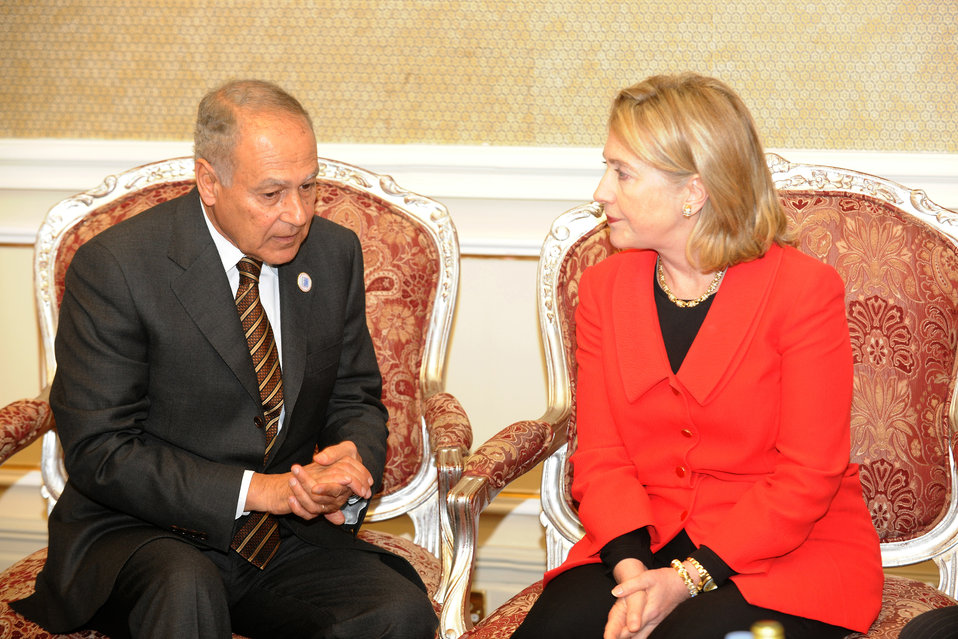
Secretary Clinton Speaks With Egyptian Foreign Minister Ahmed Ali Aboul Gheit

U.S. Secretary of State Hillary Rodham Clinton speaks with Egyptian Foreign Minister Ahmed Ali Aboul Gheit during a bilateral meeting Jan 12 in Doha, Qatar, on January 12, 2010.